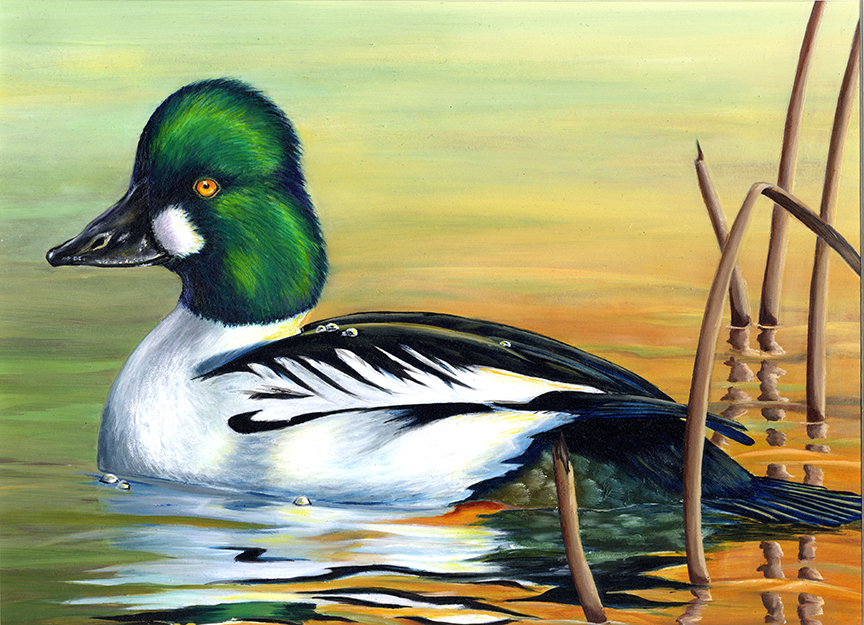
JRDuck2013MN

2013 Junior Duck Stamp Best of Show-Minnesota